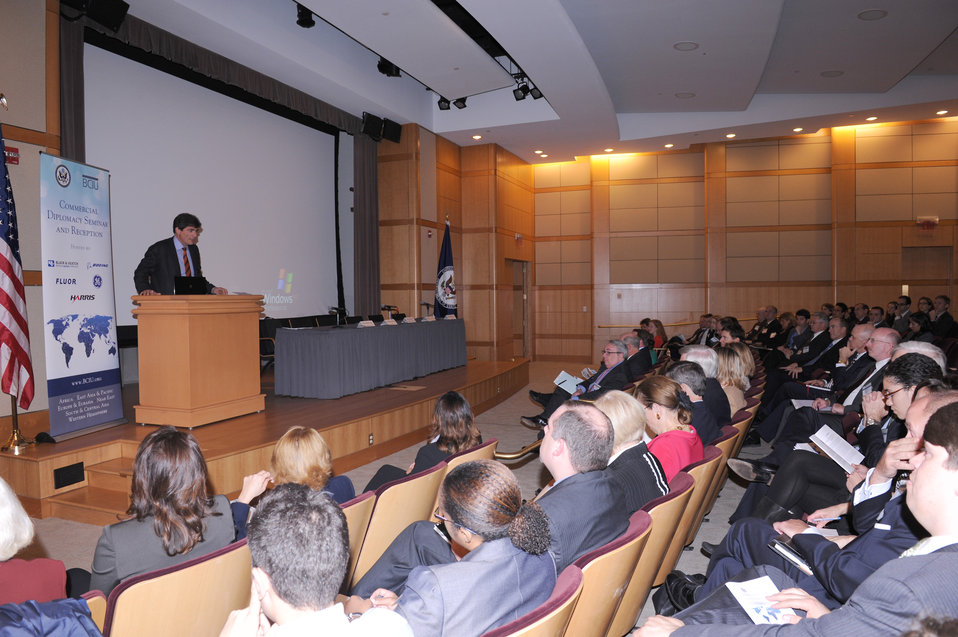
Assistant Secretary Fernandez Delivers Remarks at a Commercial Diplomacy Seminar

Assistant Secretary of State for Economic and Business Affairs Jose Fernandez delivers opening remarks at a Commercial Diplomacy Seminar for Desk Officers at the U.S. Department of State in Washington, D.C., on November 21, 2011.